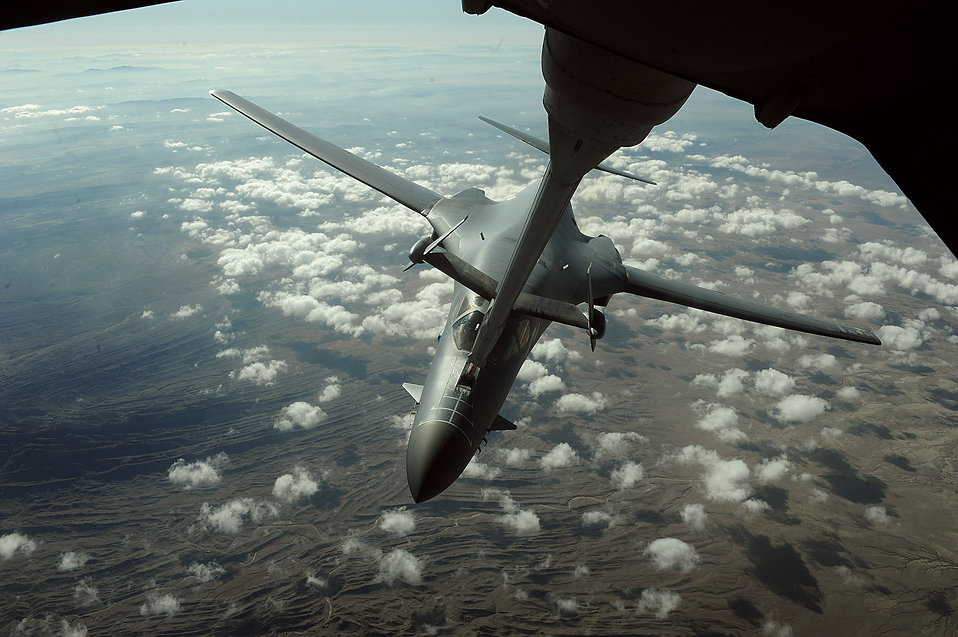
Jan. 27 airpower summary: B-1Bs provide overwatch

A B-1B Lancer receives fuel over Afghanistan from a KC-10 Extender. B-1Bs can rapidly deliver massive quantities of precision and non-precision weapons against any adversary. The B-1B is assigned to the 34th Expeditionary Squadron and the KC-10 is assigned to the 908th Expeditionary Aerial Refueling Squadron.